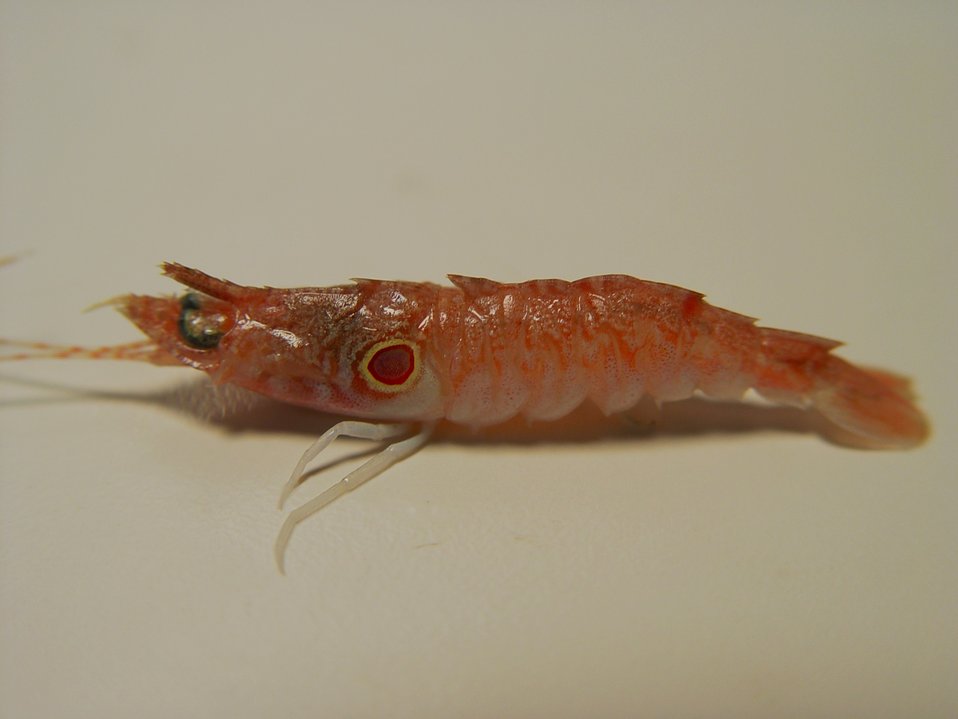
Spiny rock shrimp ( Sicyonia burkenroadi )